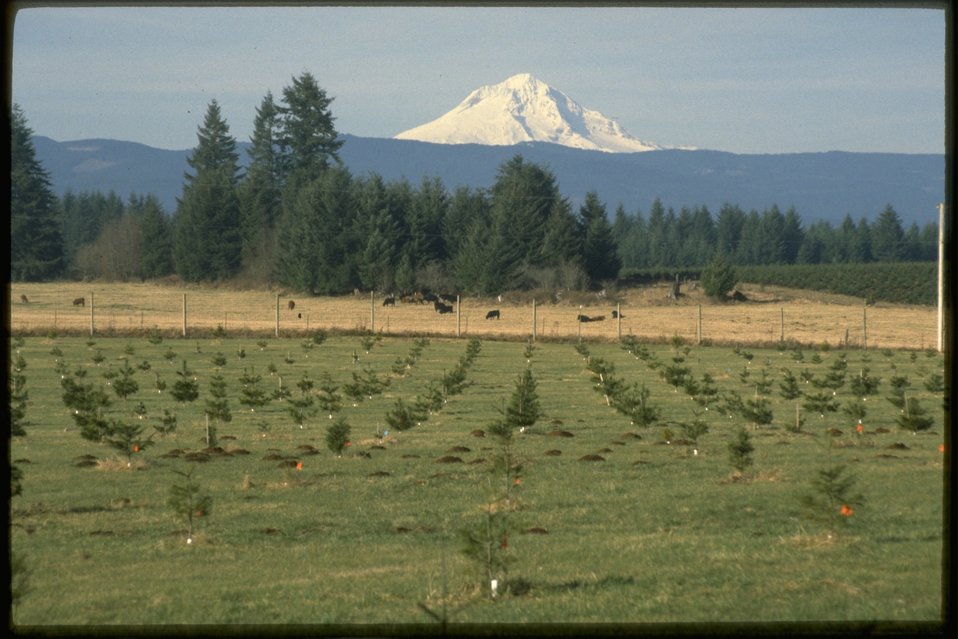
Horning Seed Orchards near Carlton with Mt. Hood in the background.